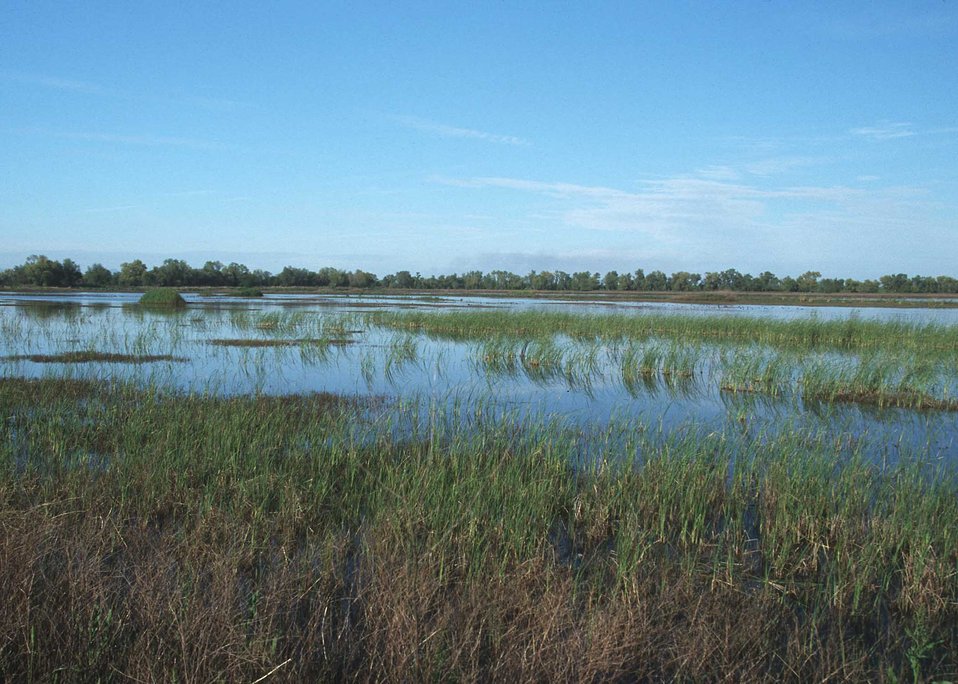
Restored wetland in northern California. Landowners used the Natural Resources Conservation Service's Wetlands Reserve Program to restore this wetland area.